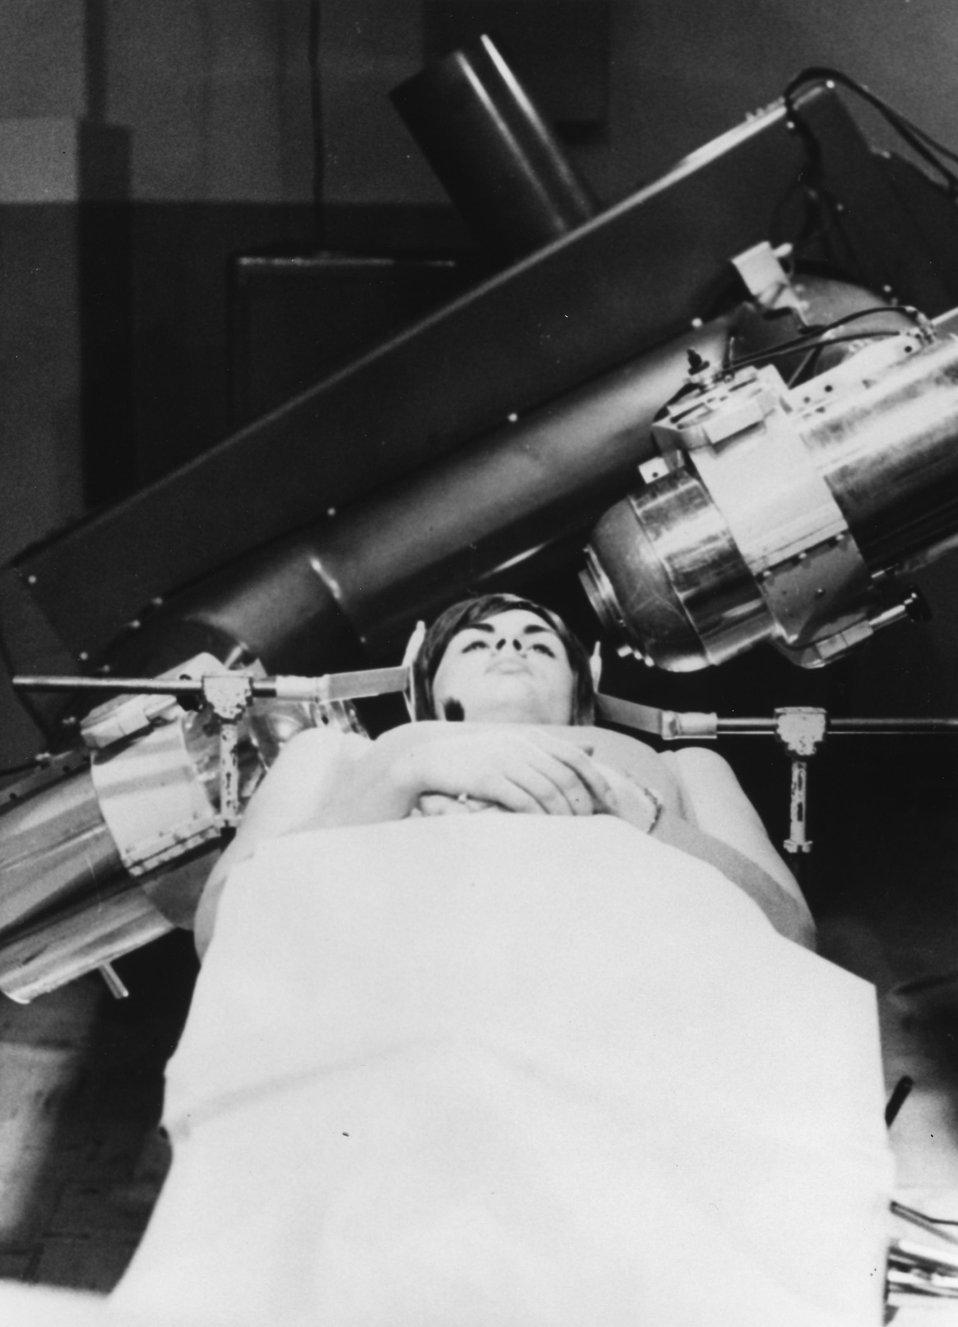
Mark II experimental brain scanner at University of Pennsylvania Hospital in Philadelphia. Circa 1971.